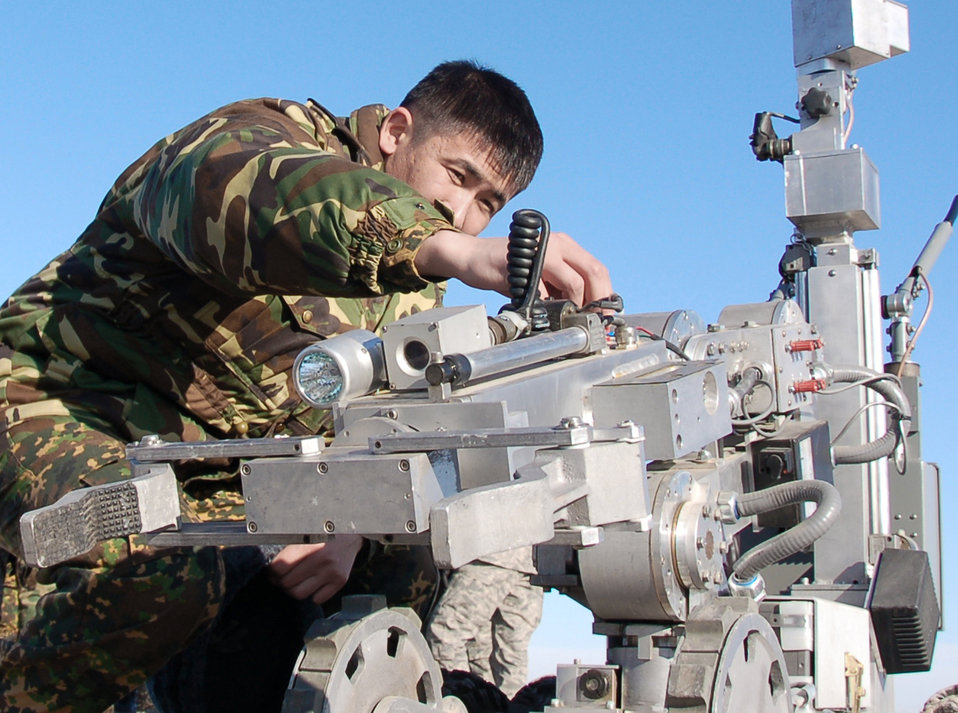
Airmen train Kyrgyz officials on EOD mission

Kyrgyz Capt. Nurgali Baitubaev gets a closer look at an explosive ordnance disposal robot during the Kyrgyz Ministry of Defense team's visit from Dec. 14 to Dec. 18, 2009, to learn about EOD operations from Airmen with the 376th Expeditionary Civil Engineer Squadron at the Transit Center at Manas, Kyrgyzstan. The five-day visit was to help the host nation build a proficient EOD team.